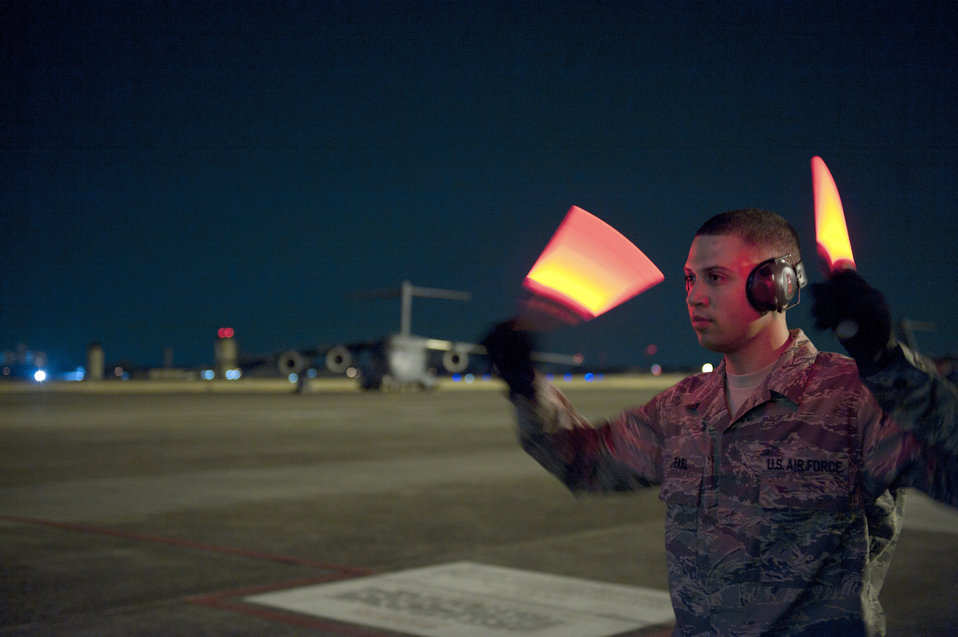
Contracting Airmen play crucial role in Operation Tomodachi

Staff Sgt. Mychal Earl directs the off-loading of a C-17 Globemaster III March 29, 2011, at Yokota Air Base, Japan. The C-17 carried water pumps and hoses to help stabilize the nuclear power plant in Japan in support of Operation Tomodachi. Sergeant Earl is the 730th Air Mobility Squadron ramp services supervisor.